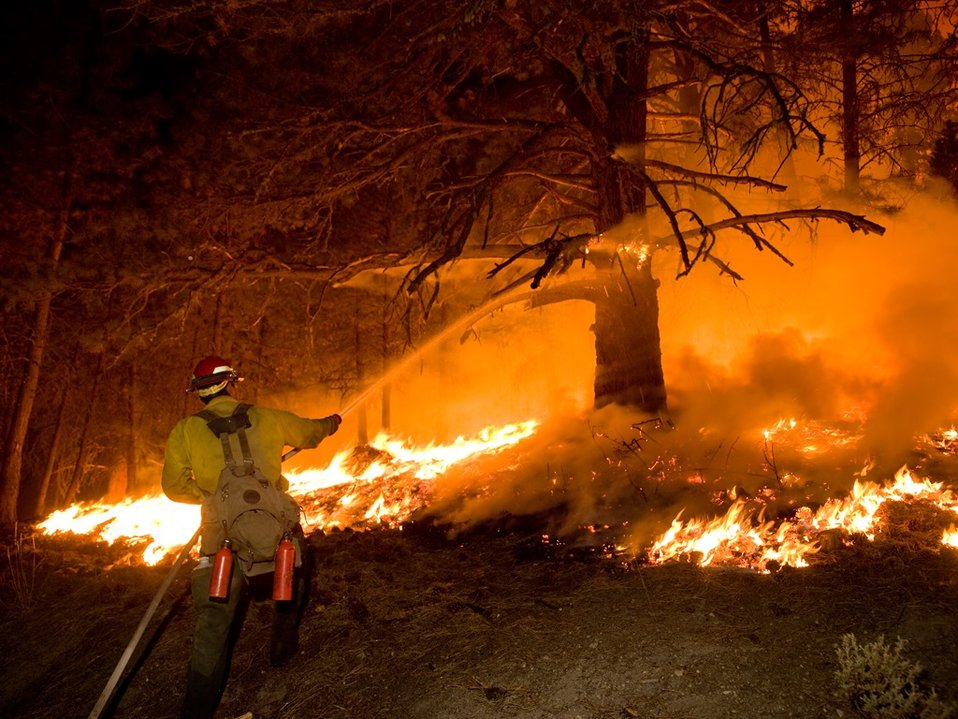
Trinity Ridge Fire, Idaho

U.S. Forest Service (USFS) firefighters battle the wildland fire during the Trinity Ridge Fire in the Boise National Forest near Pine and Featherville, Idaho in August 2012.